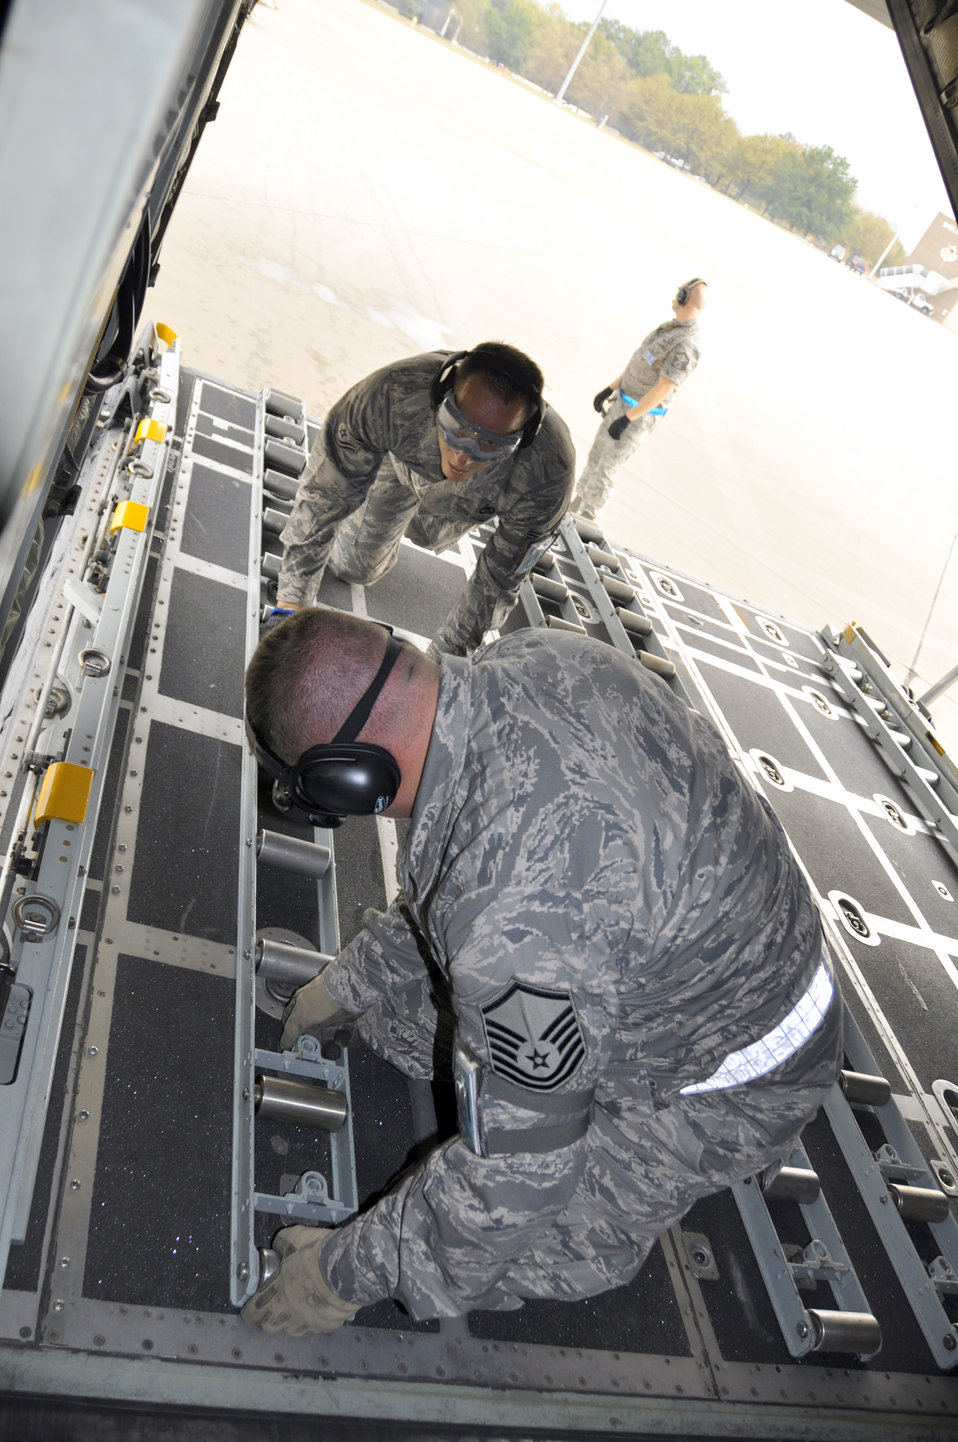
Port Dawg Challenge tests skills, strengthens camaraderie

Master Sgt. Keith Quimby (front) and Tech. Sgt. Justin Adams secure rollers on the ramp of a C-130 Hercules after unloading a Humvee and pallet full of cargo during a timed event Oct. 27, 2010, at Air Force Reserve Command's Port Dawg Challenge at Dobbins Air Reserve Base, Ga. Aerial porters from 24 units across Air Force Reserve Command are vying for the top prize at the event. Sergeants Quimby and Adams are both assigned to the 67th Aerial Port Squadron from Hill Air Force Base, Utah.